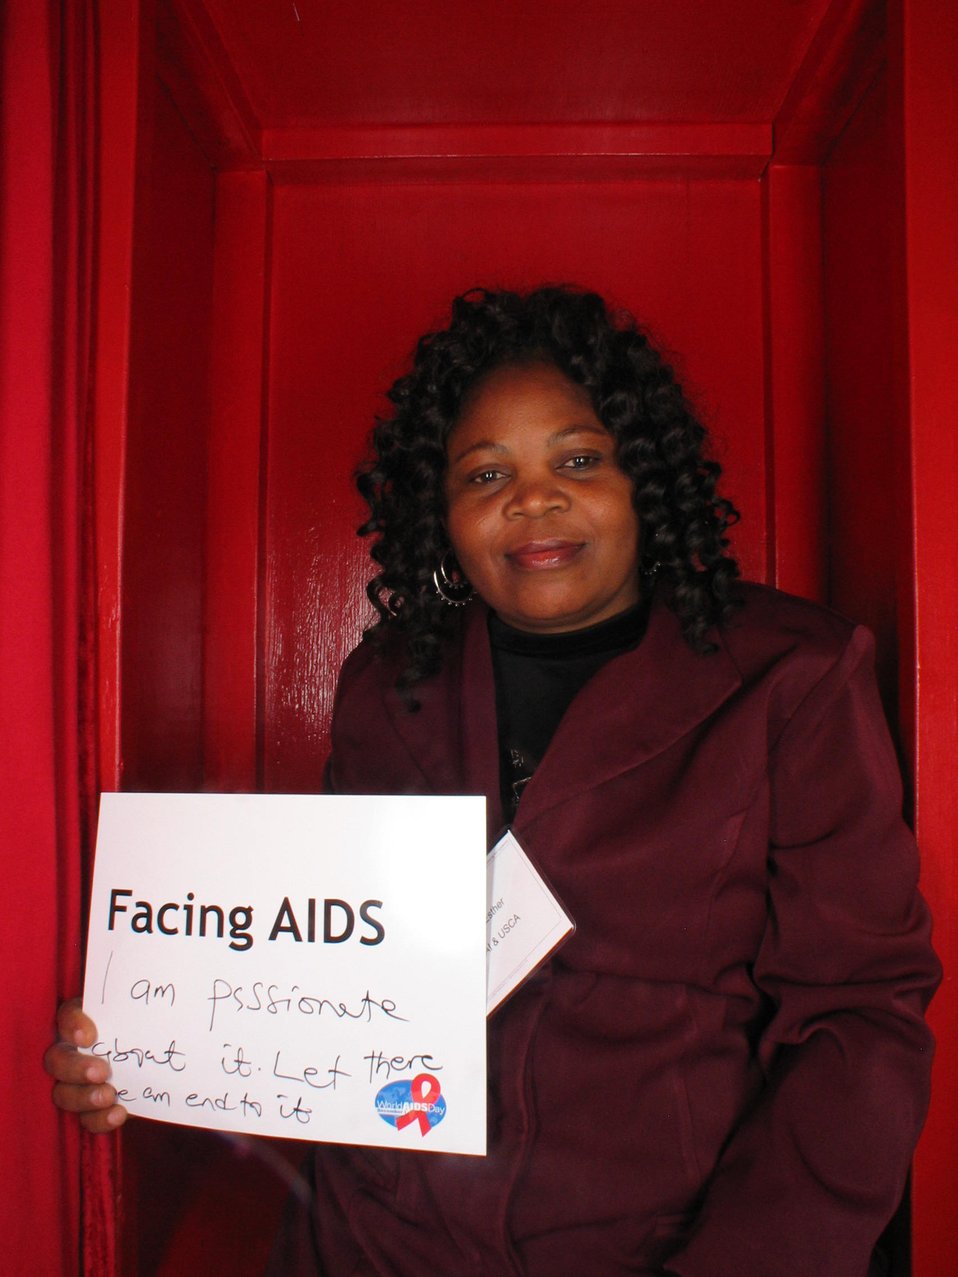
Facing AIDS I am passionate about it. Let there be an end to it.